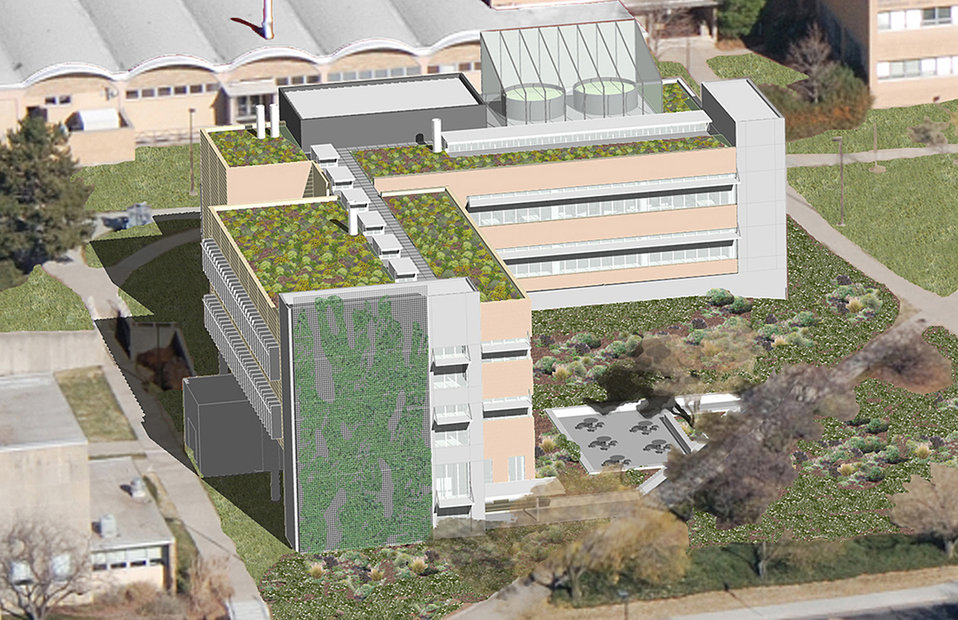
Recovery Act Grant; University of Kansas

Artist's rendition of the planned Measurement, Materials and Sustainable Environment Center (M2SEC) at the University of Kansas.